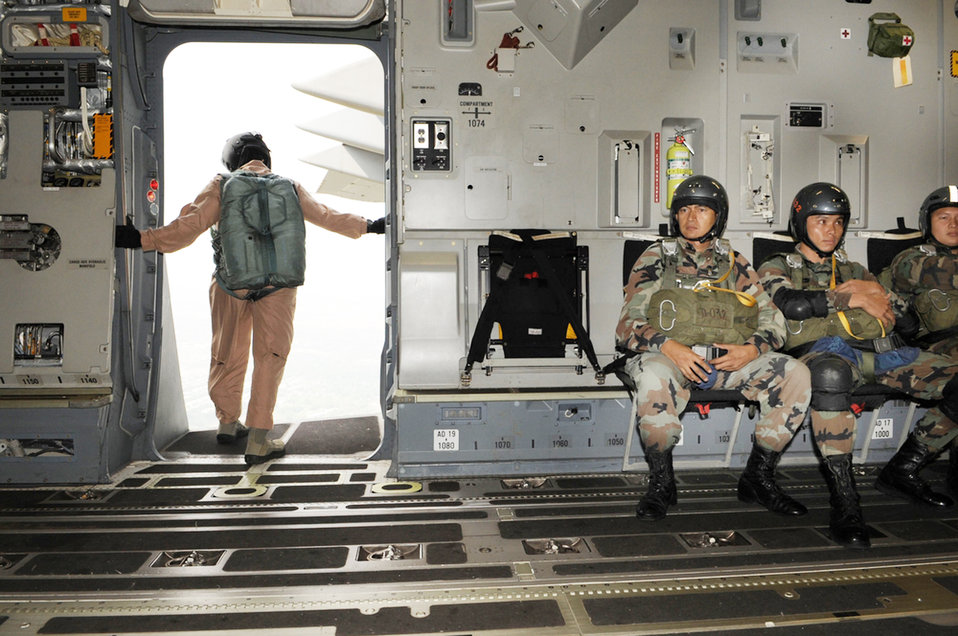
COPE TIGER 2010

Master Sgt. John Gaona, deployed to Cope Tiger 2010 from Pope Air Force Base, N.C., watches as members from the Royal Thai Air Force Parachute Team perform a static-line jump from a C-17 Globemaster III at Dom Muang Royal Thai Air Force Base, Thailand, March 3, 2010. Cope Tiger is a multilateral, combined and joint command post and field training exercise involving the United States, Thailand and Singapore. The exercise takes place March 1-12.